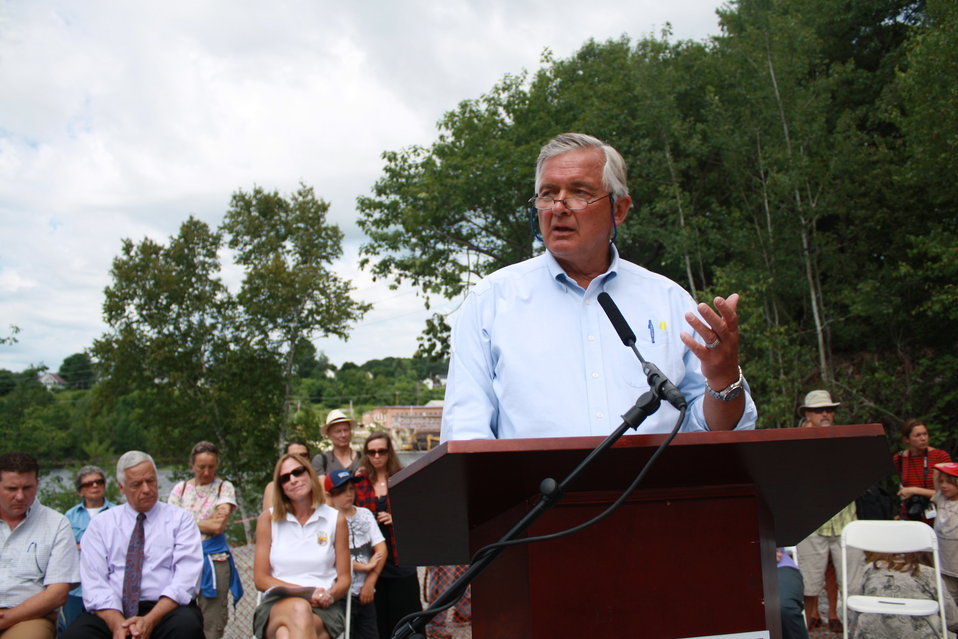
Veazie Dam Removal

John Bullard, Regional Administrator of the National Oceanic and Atmospheric Administration.